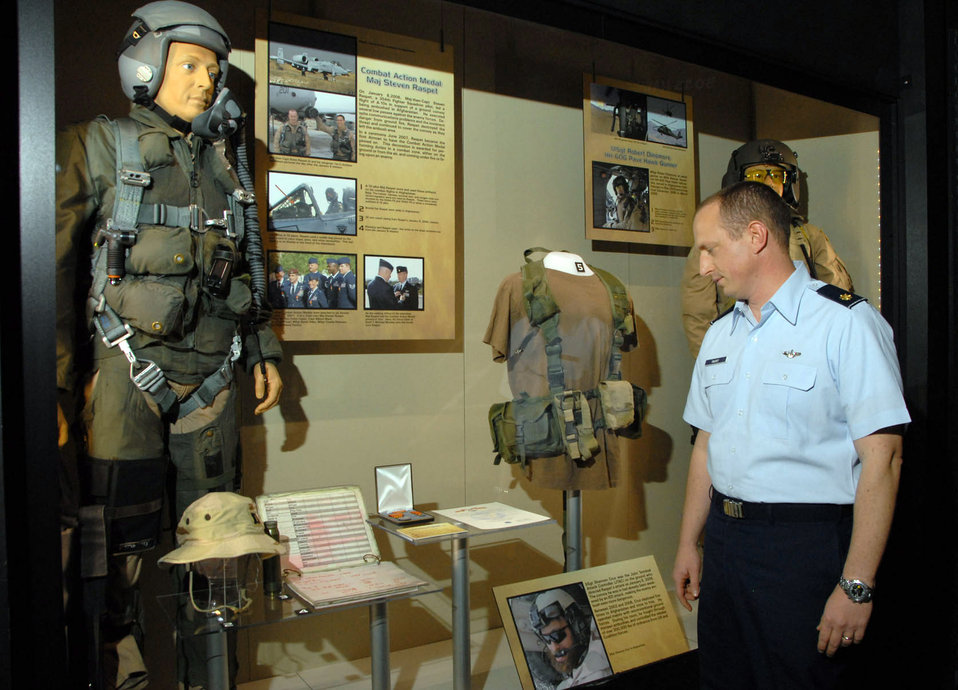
Major's medal, artifacts on display at Air Force Museum

Maj. Steve Raspet looks at the mannequin that represents him and some of the artifacts he donated as part of the new